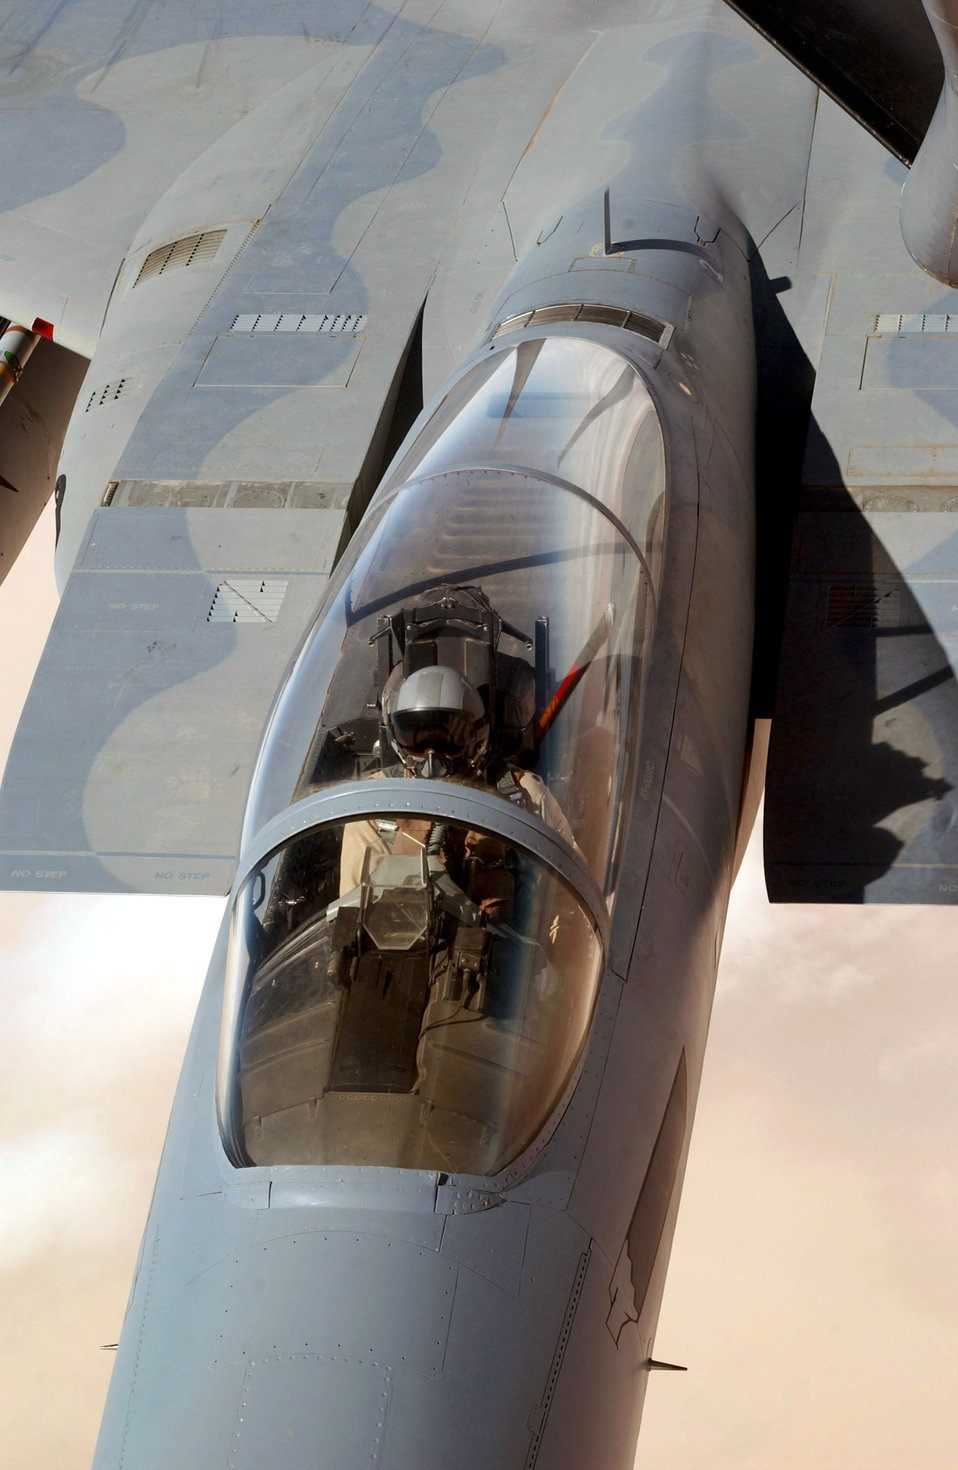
Topped off

OPERATION IRAQI FREEDOM -- An F-15C Eagle pilot completes an inflight refueling high over the Southwest Asia desert. The F-15C is operating from a forward-deployed location.